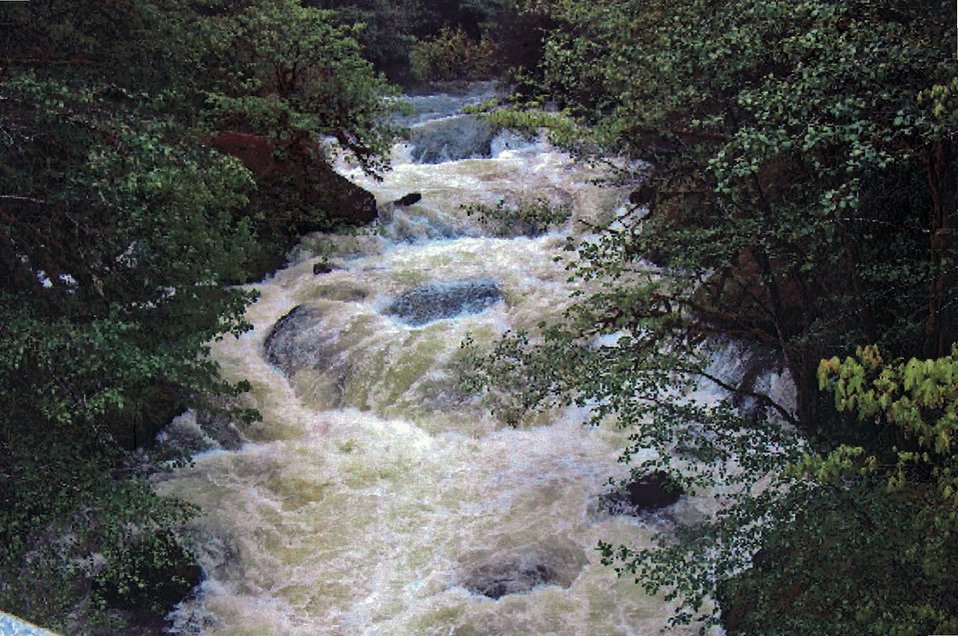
Mill Creek Bob Barns, Coos Bay Landscape2